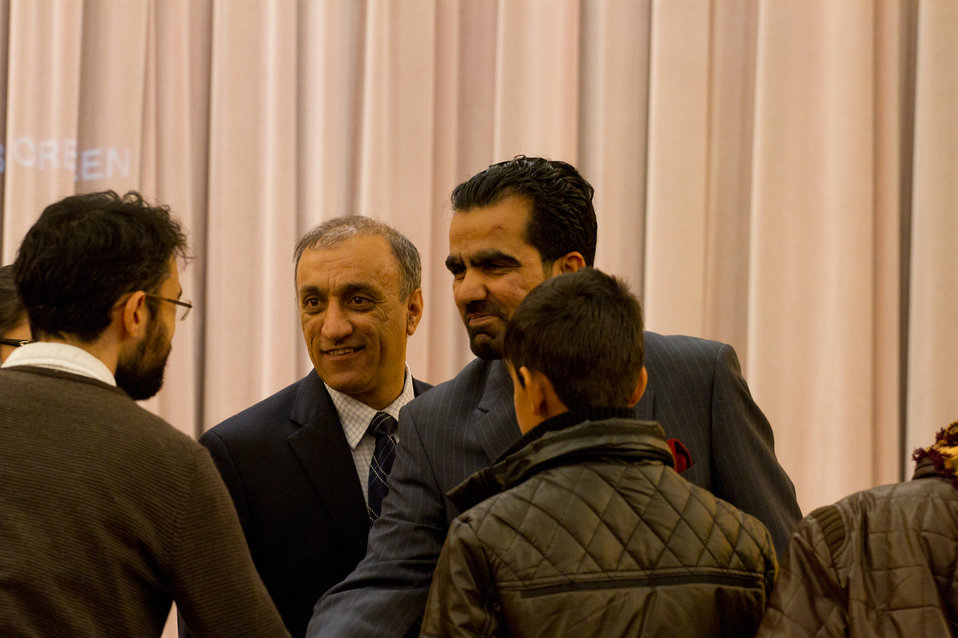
The Stars and Producer of Buzkashi Boys Visit the State Department

The stars and producer of the Oscar-nominated film Buzkashi Boys visit the U.S. Department of State in Washington, D.C., for a screening and Q and A on February 28, 2013.